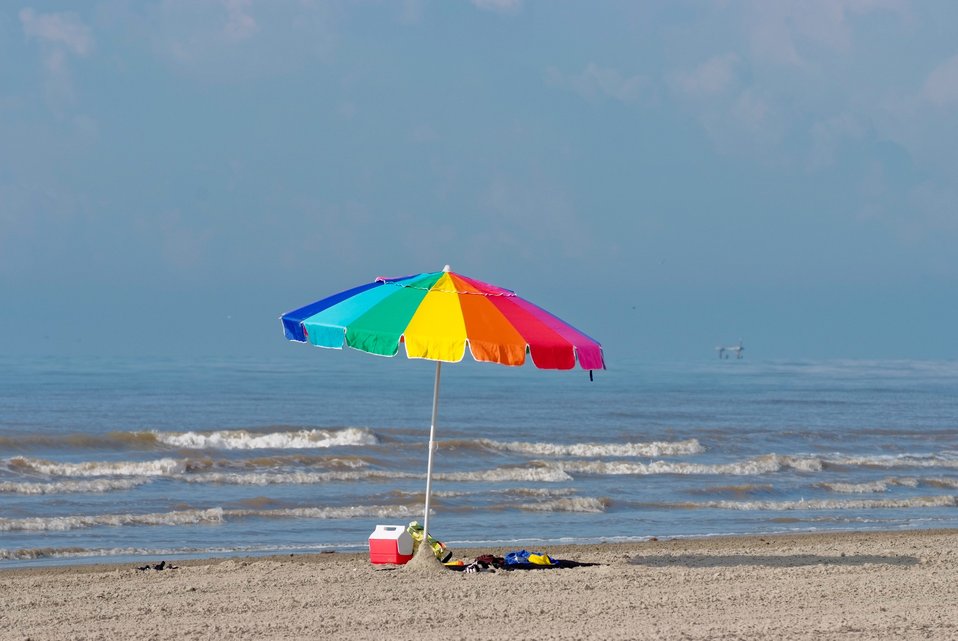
Beach umbrella, Texas